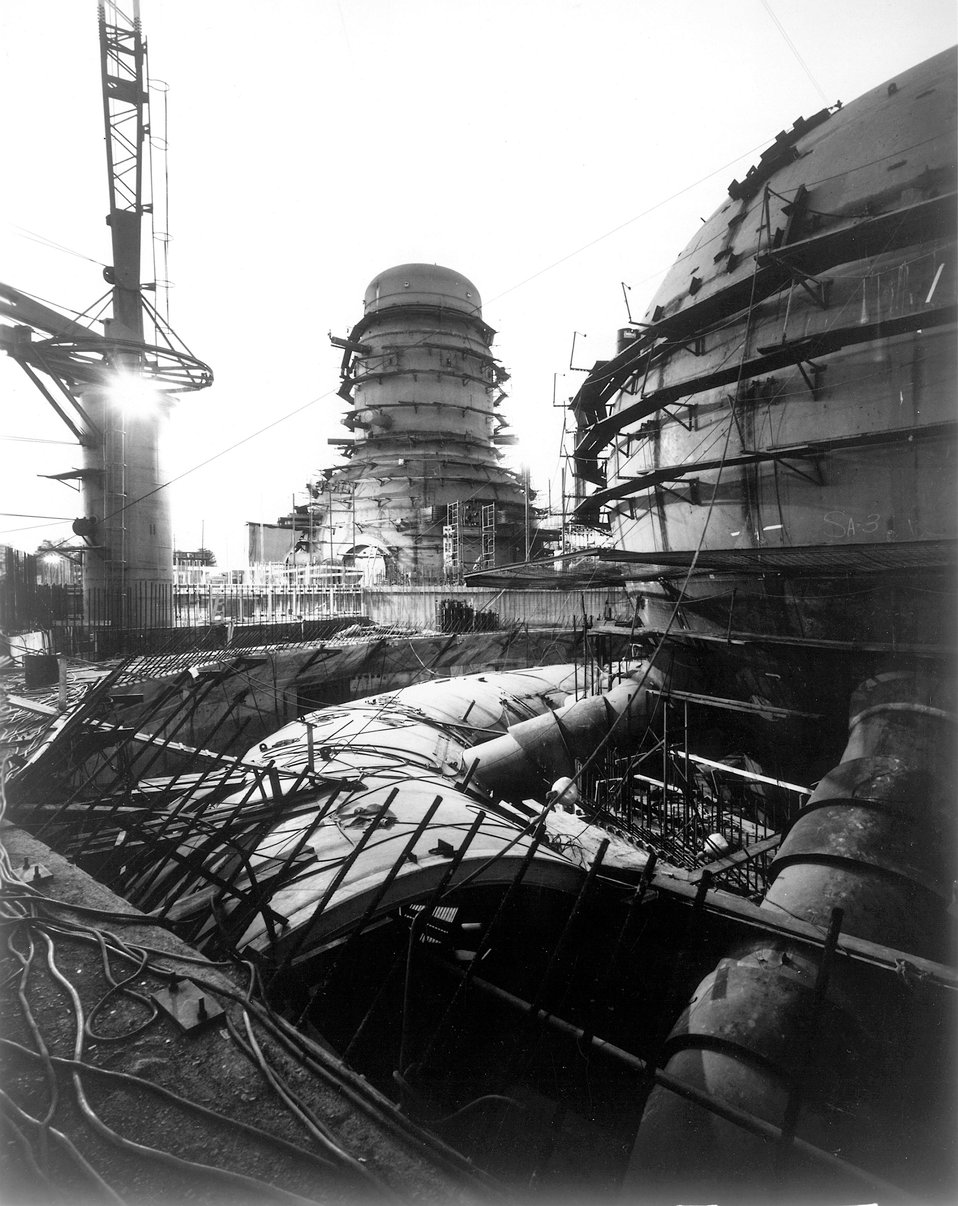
TVA's Browns Ferry Nuclear Power Plant under construction at a site on Wheeler Lake, 10 miles southwest of Athens, Alabama. Circa 1970.